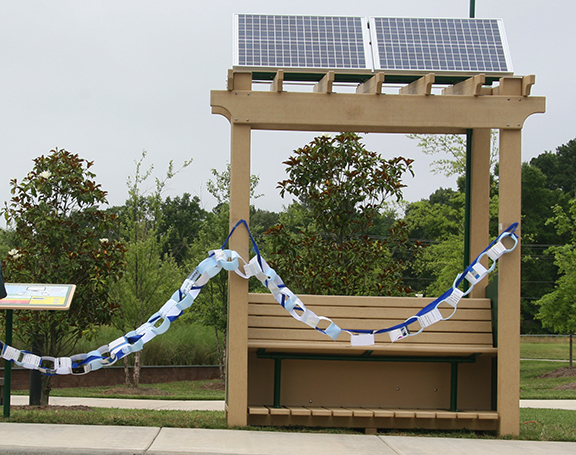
June 2013 - Village Green Project park bench with ribbon

The Village Green Project prepped for the ribbon-cutting. The solar panels on top of the bench power the entire system. This is a research project and is in the process of being tested.